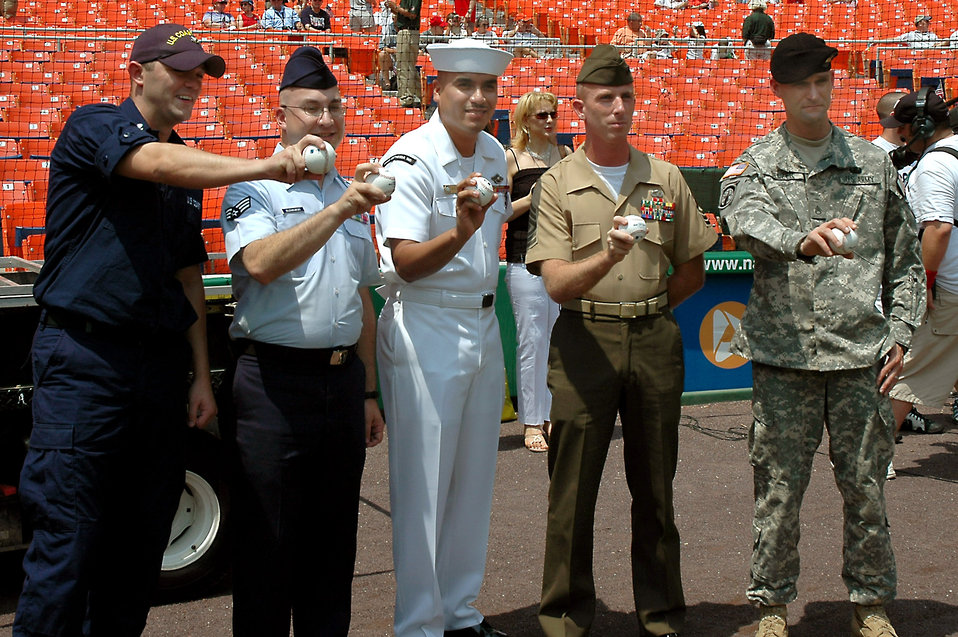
Nationals game

(From left) Coast Guard Petty Officer 2nd Class Seth Cockram, Headquarters U.S. Coast Guard; Senior Airman Joseph Buzanowski, Detachment 16, Air Force News Agency, Washington, D.C.; Navy Hospital Corpsman 2nd Class Roberto Medrano, National Naval Medical Center, Bethesda, Md.; Marine Corps First Sgt. Bobby Barnett, Henderson Hall Company, Washington, D.C.; and Army Staff Sgt. Jody Belzer, 289th Military Police Company, Fort Meyer, Va., were all given the opportunity to throw out a ceremonial